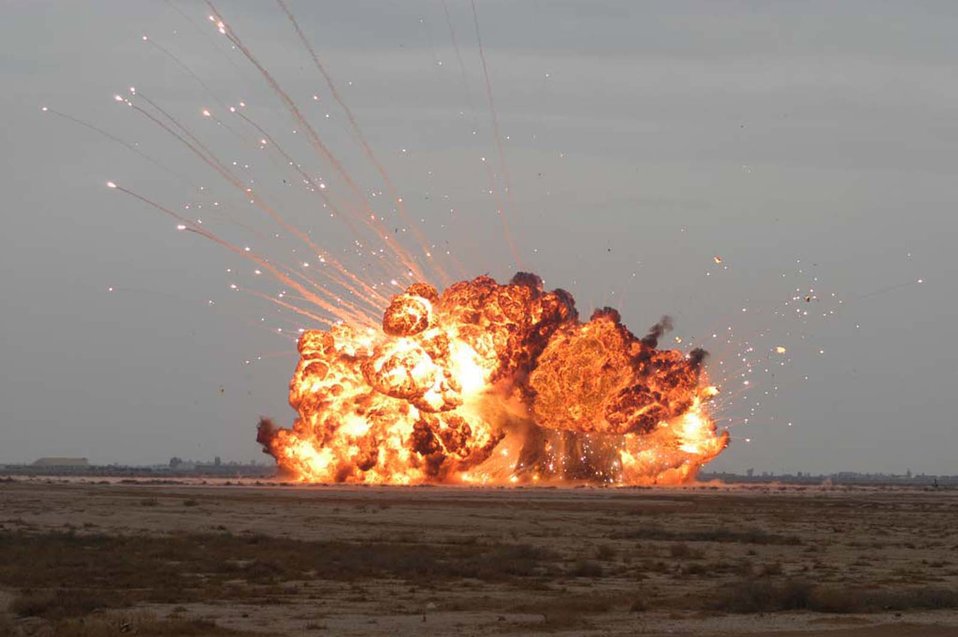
EOD protects people from explosive hazards

BALAD AIR BASE, Iraq -- A controlled detonation eliminates unexploded ordnance found in the area. Airmen of the 332nd Expeditionary Civil Engineer Squadron explosive ordnance disposal unit destroy items weekly.